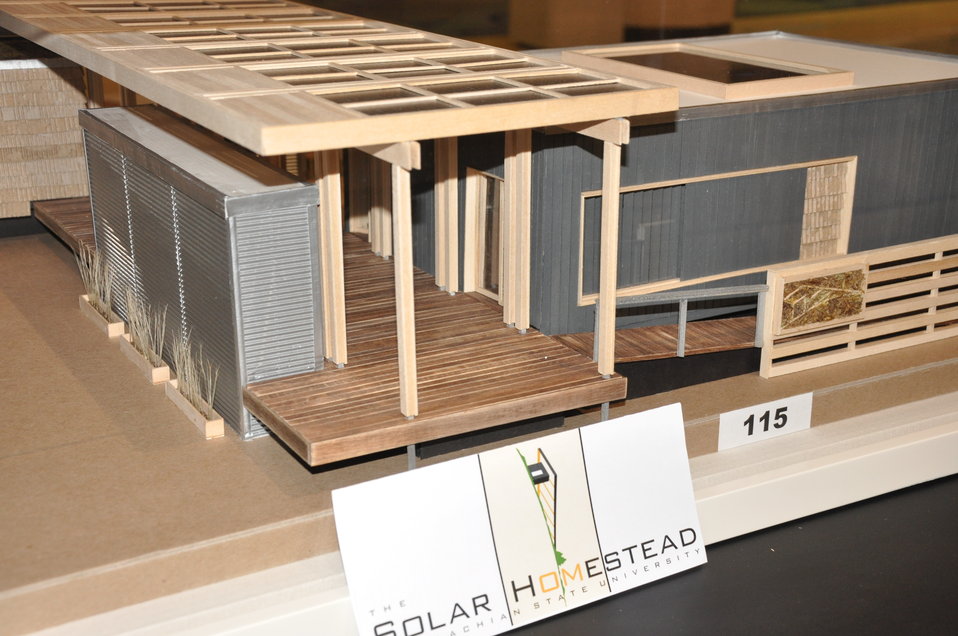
Arizona State University